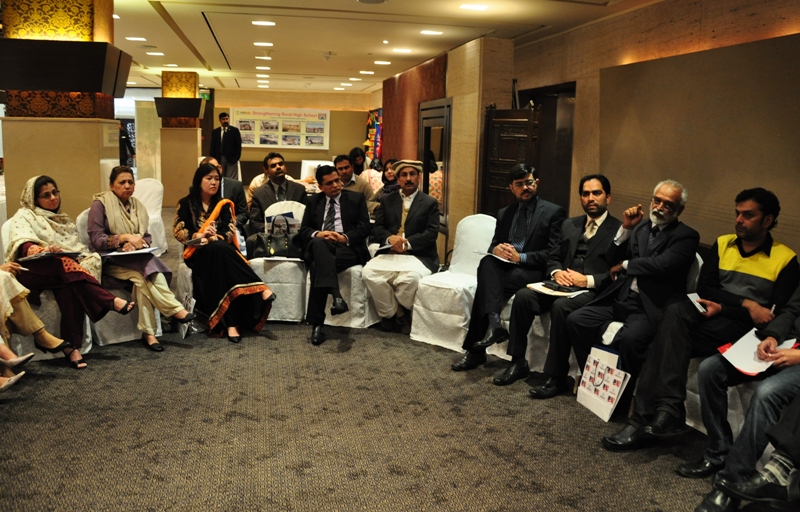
Group discussion.